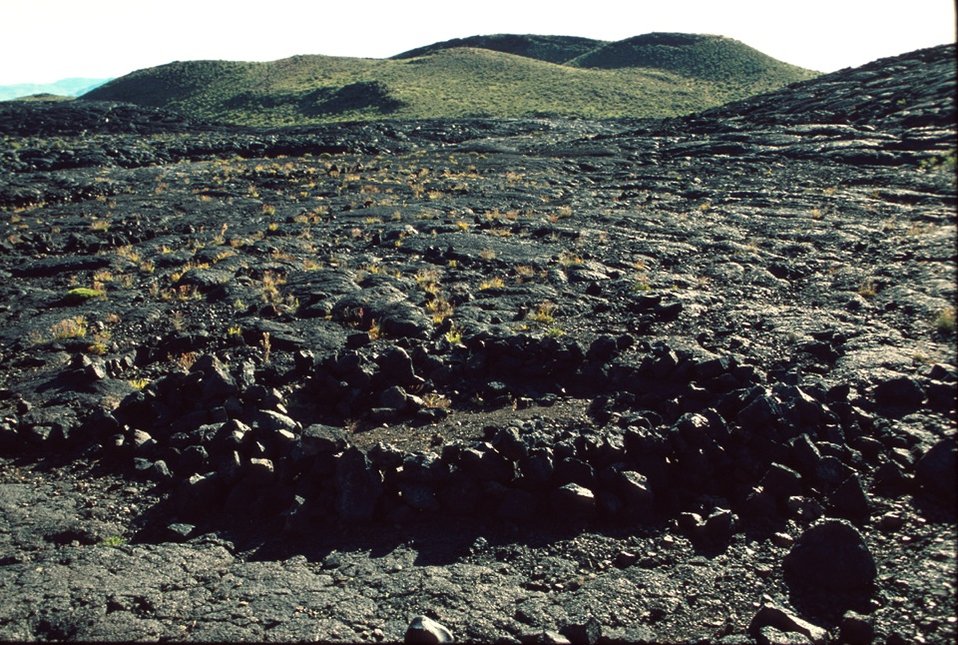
Craters of the Moon National Monument Shoshone Field Office USRD Upper Snake River District